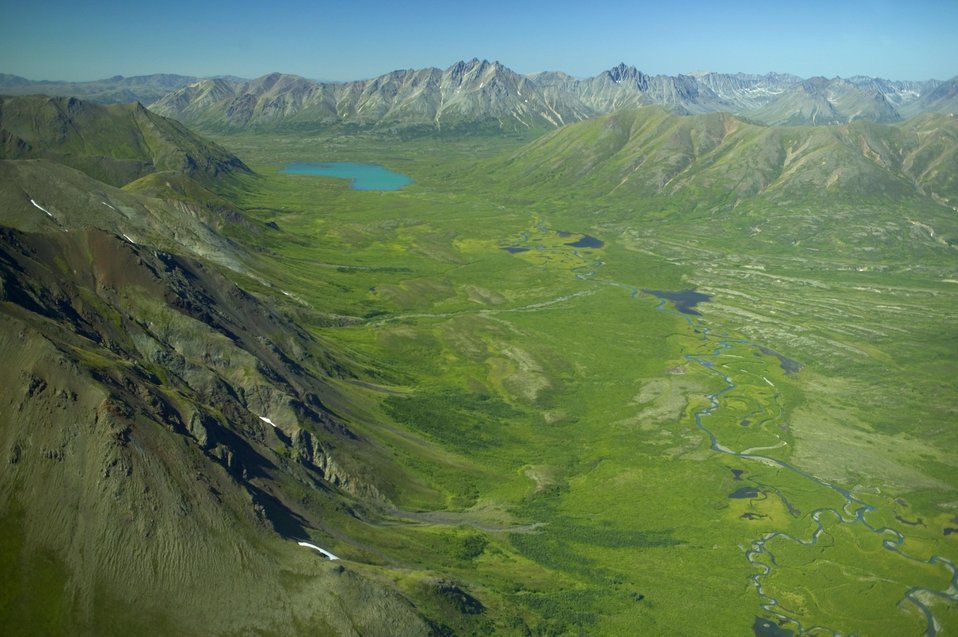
Togiak Nation Wildlife Refuge